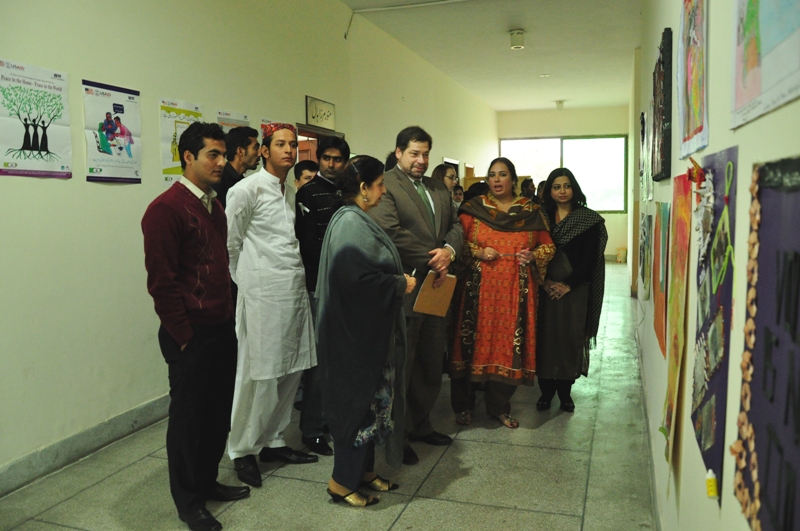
Mission Director for Punjab Jeffrey Bakken looking at art work on display by students of Gender Studies Department of Punjab University on GBV theme.